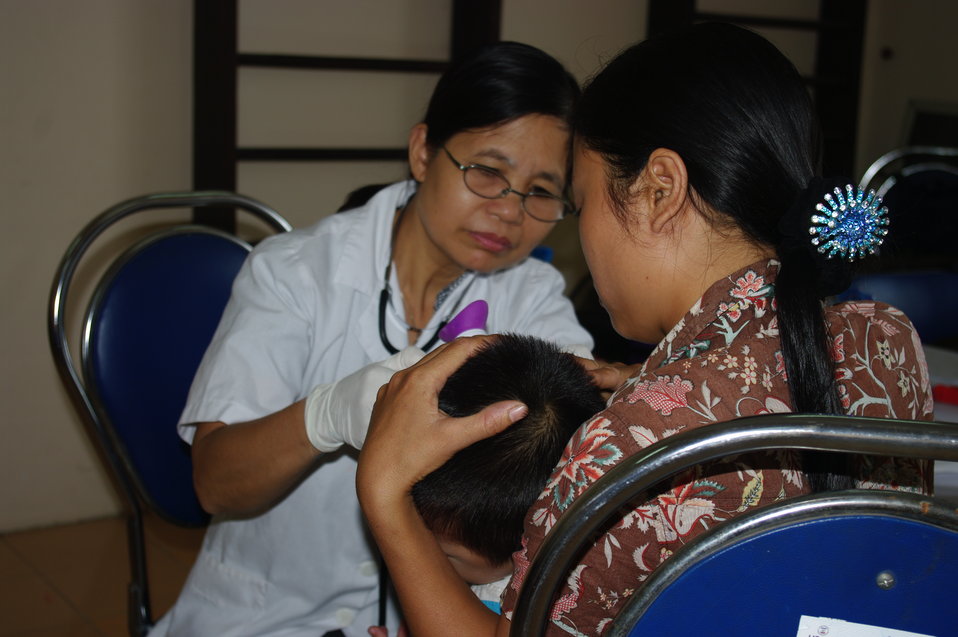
Oprhans and vulnerable children receive free medical check-ups in Hanoi